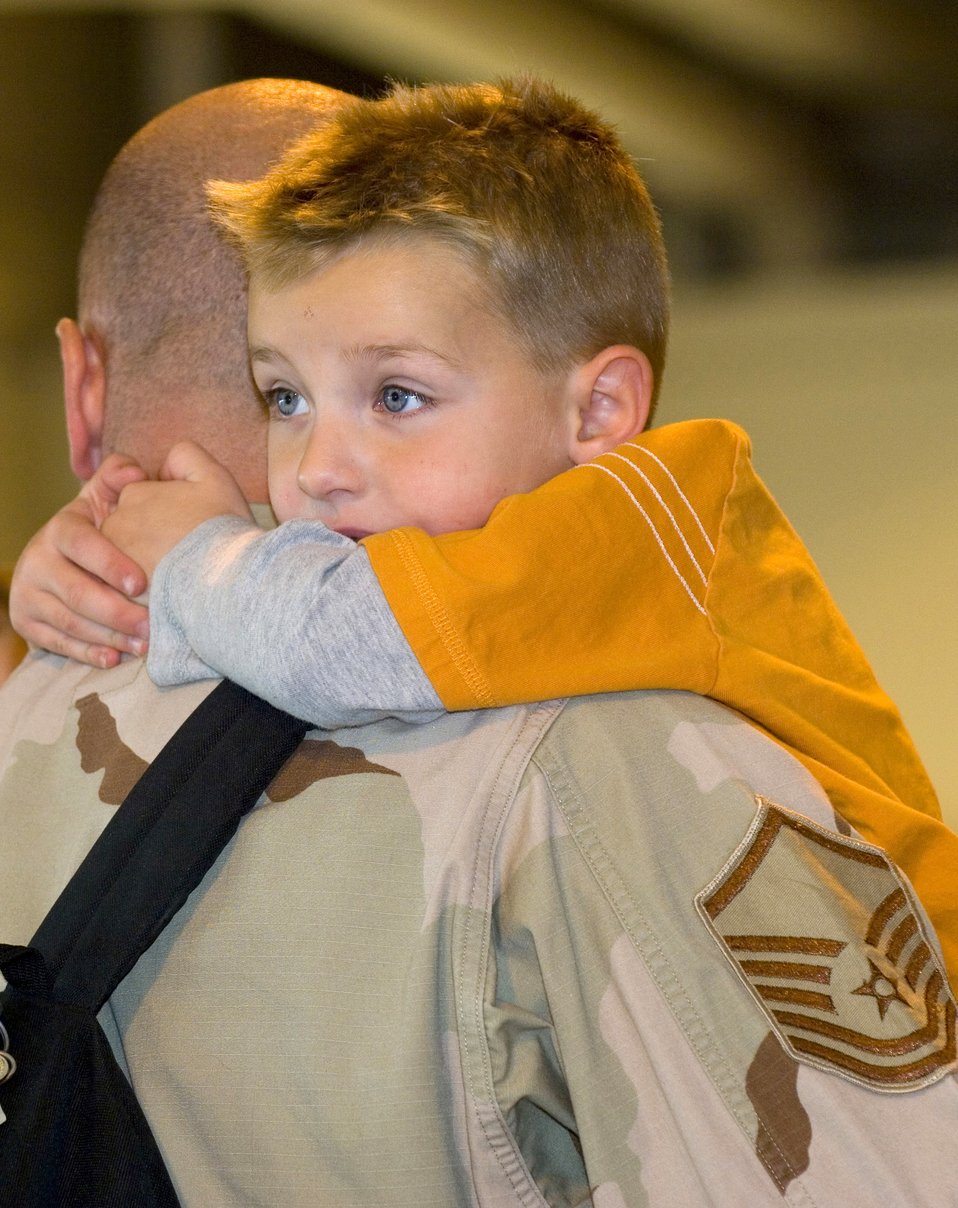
Affectionate homecoming

Dekota Wood hugs his father, Master Sgt. Noah Wood, who just arrived home at Elmendorf Air Force Base, Alaska, Sept. 17 after being deployed in Southwest Asia supporting the war on terrrorism. Approximately 40 deployed Airmen were greeted by friends and family at the joint military complex.